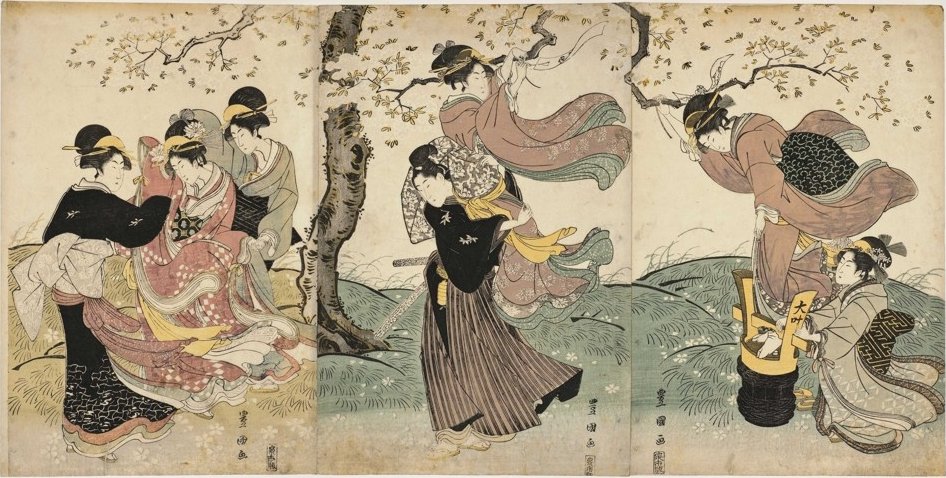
'Flowers in the Wind' by Utagawa Toyokuni I, c. 1795-1825, woodblock triptych, Honolulu Museum of Art